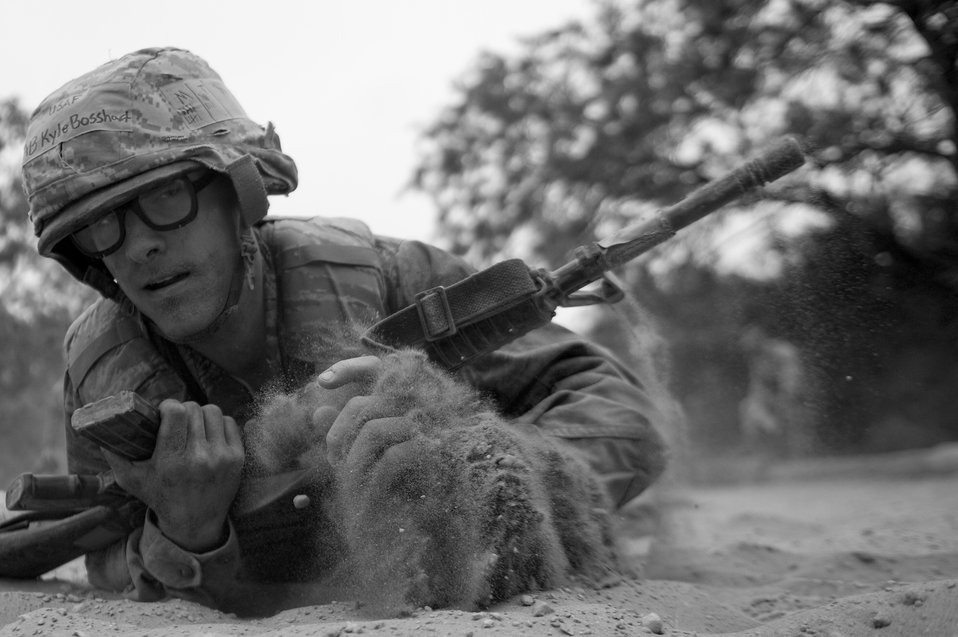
BEAST

Basic trainees go through their sixth week of Air Force basic military training at the Basic Expeditionary Airman Skills Training on May 25, 2011, at Lackland Air Force Base, Texas.